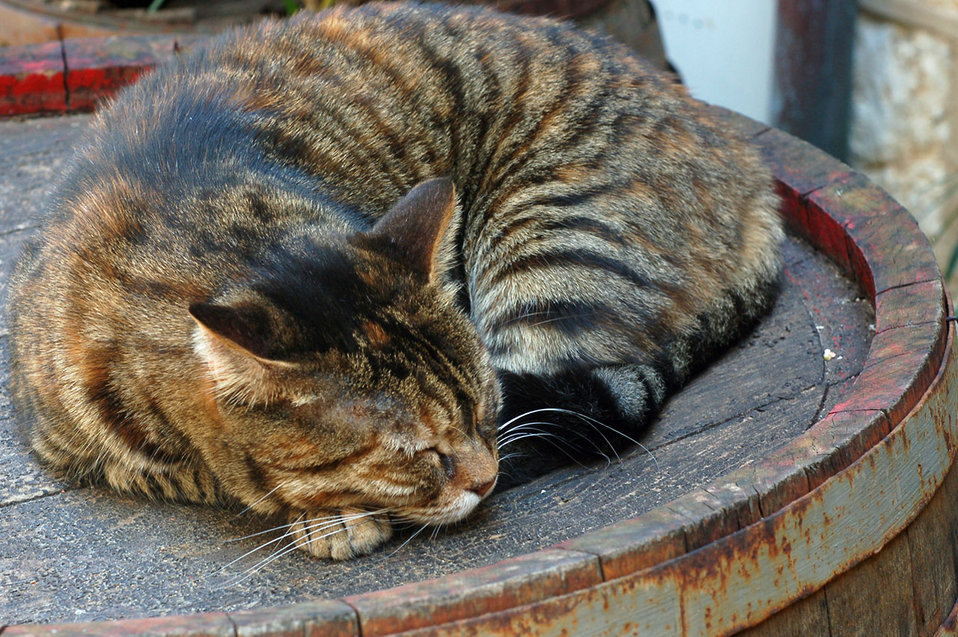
Tabby cat sleeping on a rusty barrel.